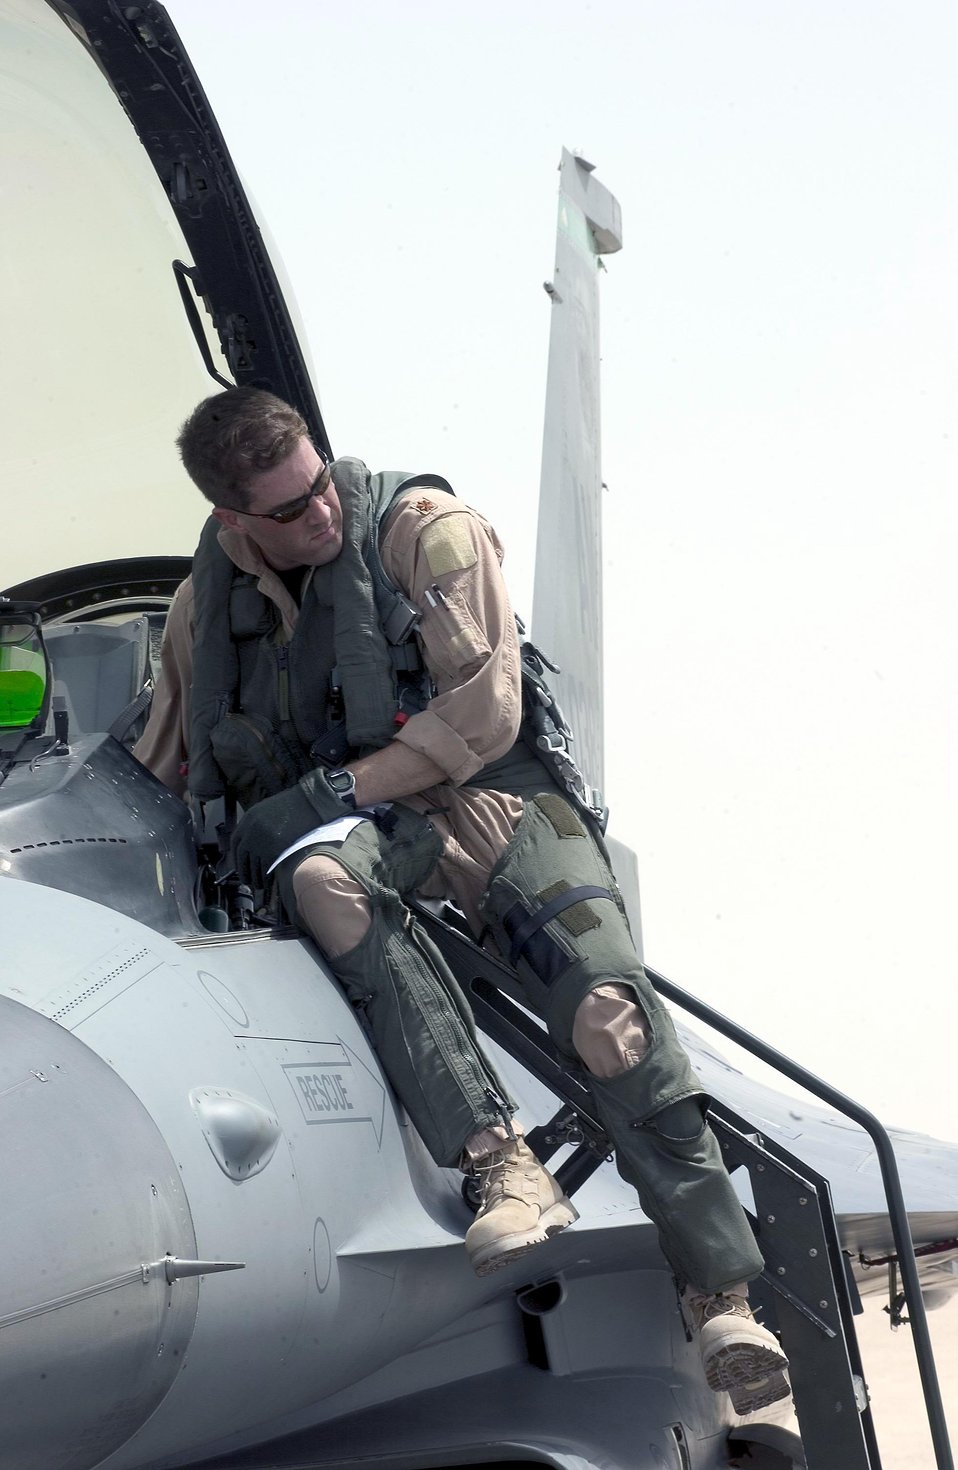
Before 'Falcons' fly

SOUTHWEST ASIA -- An F-16 Fighting Falcon pilot prepares to fly an Operation Iraqi Freedom mission from a forward-deployed location. The pilot and aircraft are assigned to the 555th Fighter Squadron at Aviano Air Base, Italy.